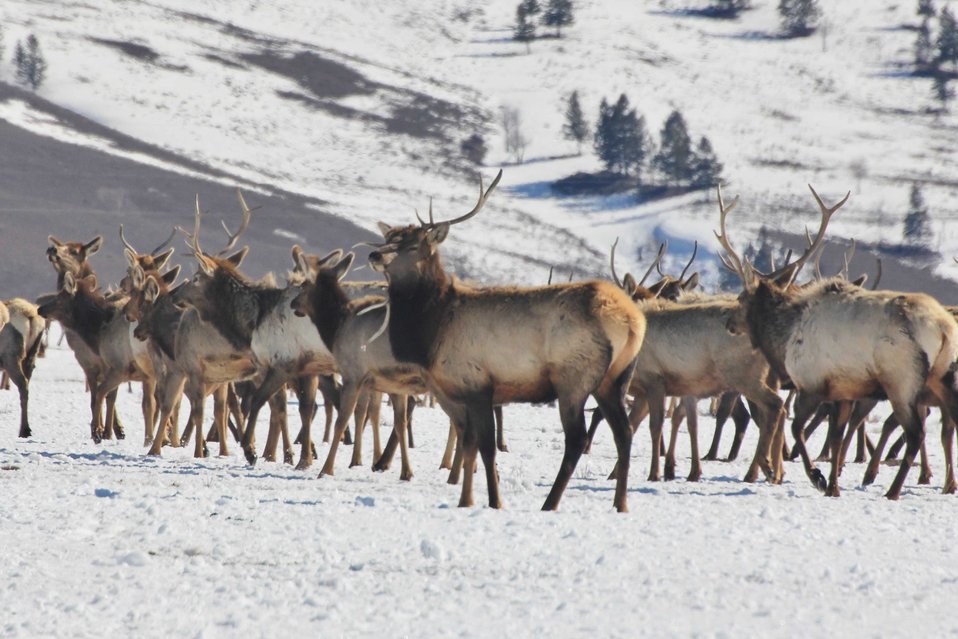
Worse Than a Loose Tooth

National Elk Refuge staff saw this bull elk's right antler dangling for several weeks, wondering when it would finally pop loose. Antlers generally begin falling in early March.

Credit: USFWS / Tony Hough, National Elk Refuge volunteer